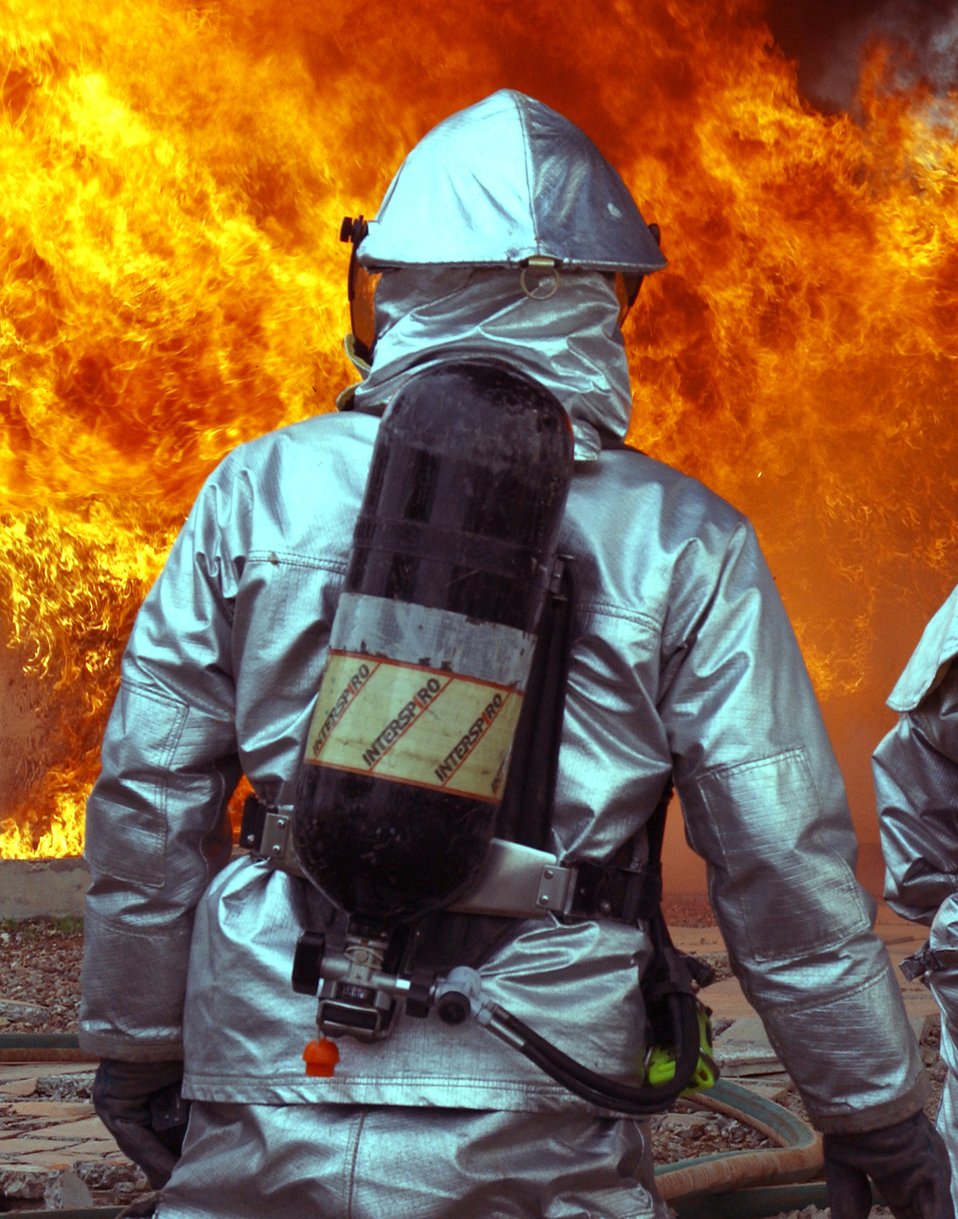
Live fire training

A firefighter with the 332nd Expeditionary Civil Engineer Squadron keeps a watchful eye on a structural fire at Balad Air Base, Iraq, Thursday, Feb. 16, 2006. The fire was set as part of a live-fire training exercise for the fire department.